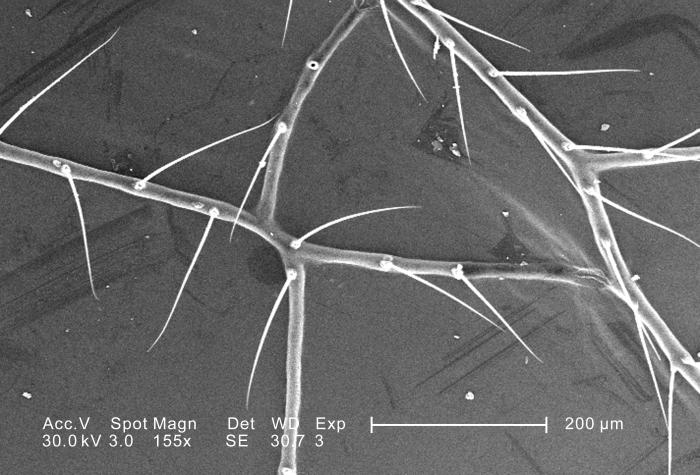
This scanning electron micrograph (SEM) depicted a highly magnified view of the wing of an unidentified green-colored flying insect found outside on the ground in the Decatur, Georgia suburbs; Magnified 155x. The debris covering the organism is mainly vegetative in nature, composed primarily of pollen granules, and disintegrated plant fibers.